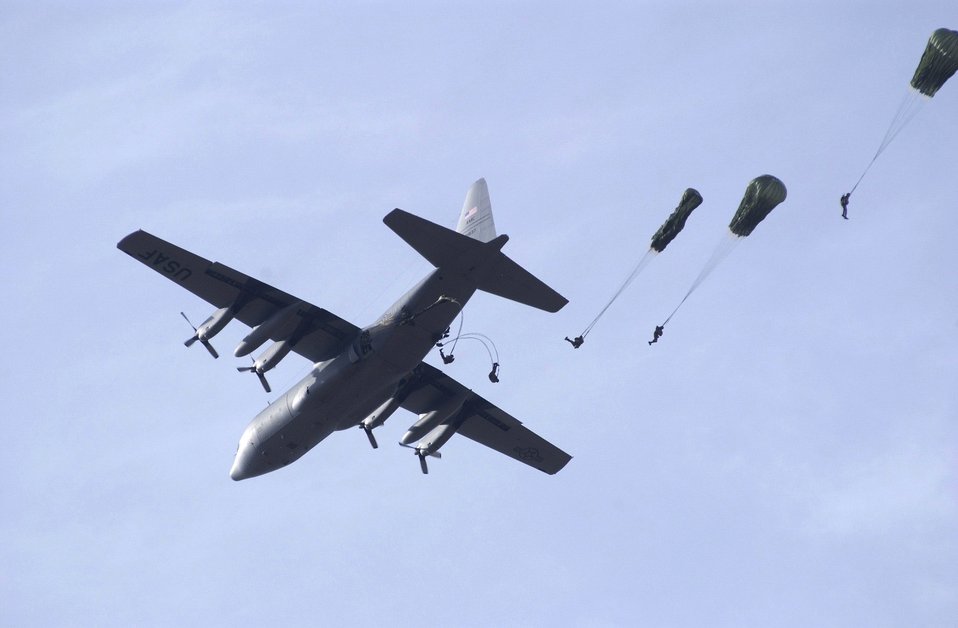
Operation Toy Drop

FORT BRAGG, N.C. (AFPN) -- Paratroopers with the 82nd Airborne Division jump in the 8th Annual Randy Oler Memorial Operation Toy Drop. The event collects toys for the children of military families here and at Pope Air Force Base, N.C., as well as those in the surrounding communities. Paratroopers participated by donating a toy in exchange for a chance to jump with German and Irish military jumpers. To date, Operation Toy Drop has collected and distributed more than 14,000 toys.